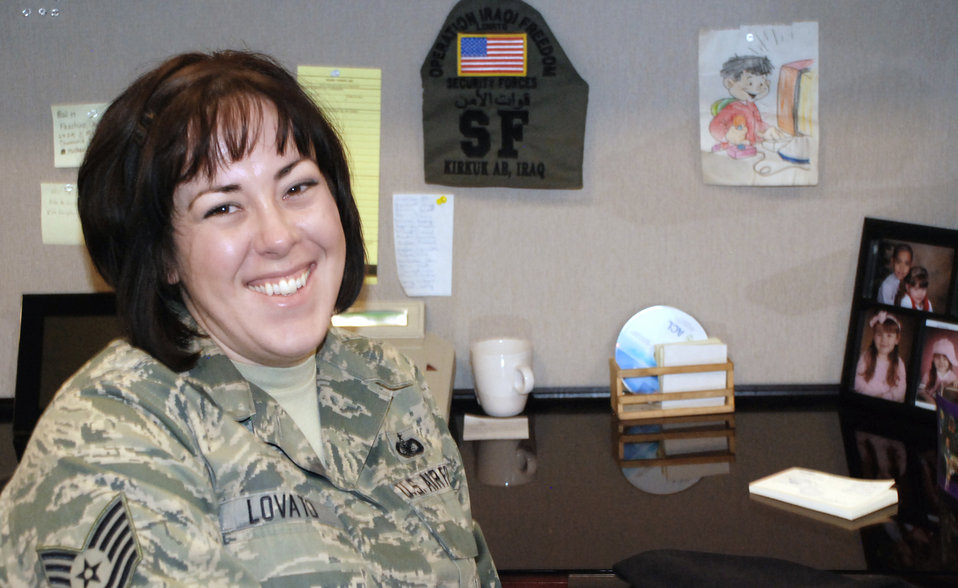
Academy NCO selected for Warrior Games

Tech. Sgt. Crystal Lovato keeps memories of her time in Iraq at her desk April 27, 2010 at Peterson Air Force Base, Colo. Sergeant Lovato, a reservist with the 302nd Security Forces Squadron, has been invited to participate in the upcoming Warrior Games in Colorado Springs, Colo.